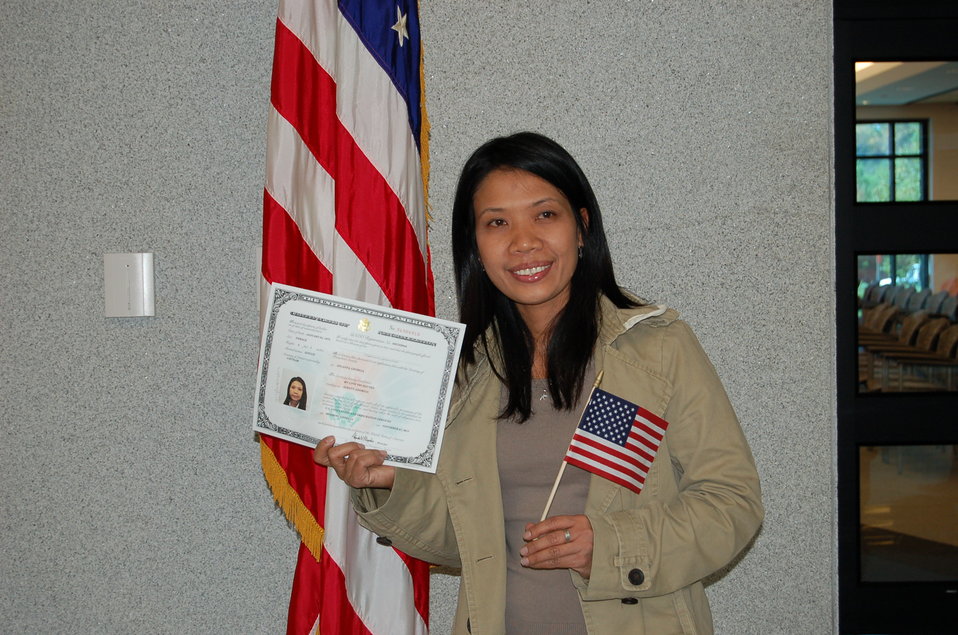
New Citizens